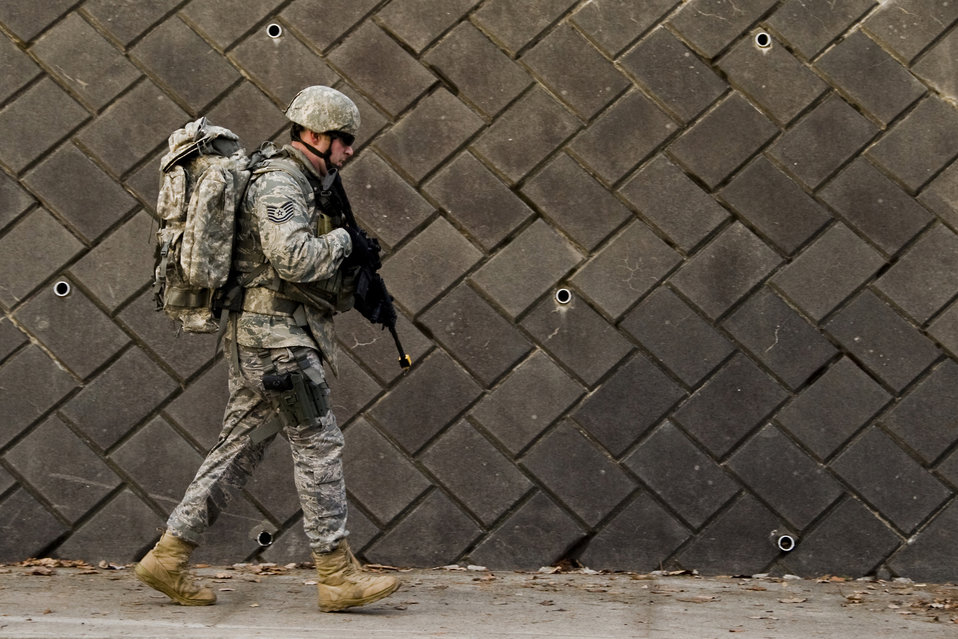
Misawa EOD unit keeps physically fit

Tech. Sgt. Jeffery Hansen marches along